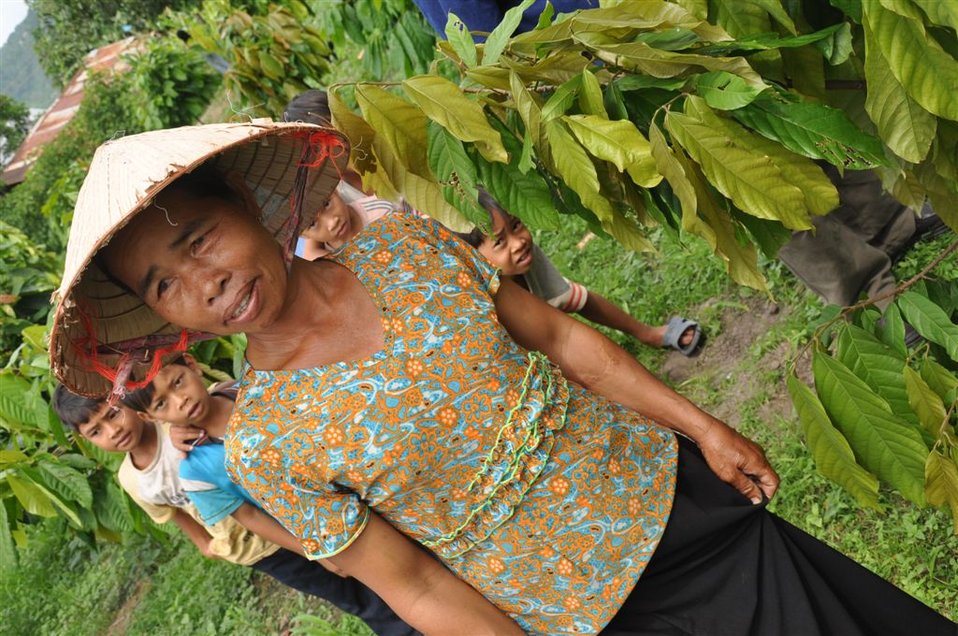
Local populations benefit from new cocoa crop techniques and market access.